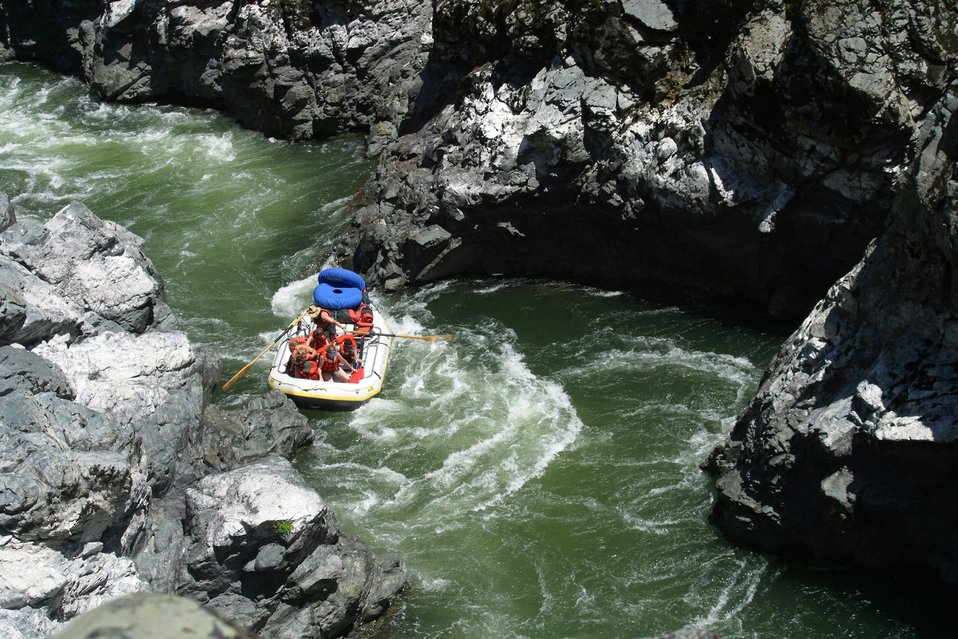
Boaters as seen from the Rogue River Trail between Mule Creek and Blossom Rapids.